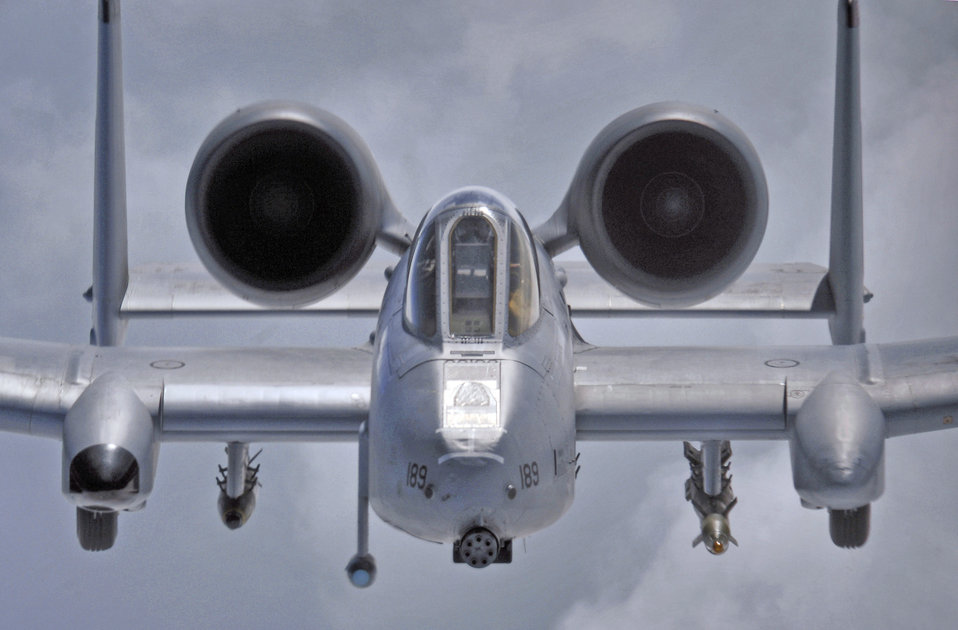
Airpower summary

A-10 Thunderbolt IIs provide close-air support to ground troops in Afghanistan and Iraq. The A-10's excellent maneuverability at low air speeds and altitude and its highly accurate weapons delivery make it an ideal aircraft for supporting coalition operations.